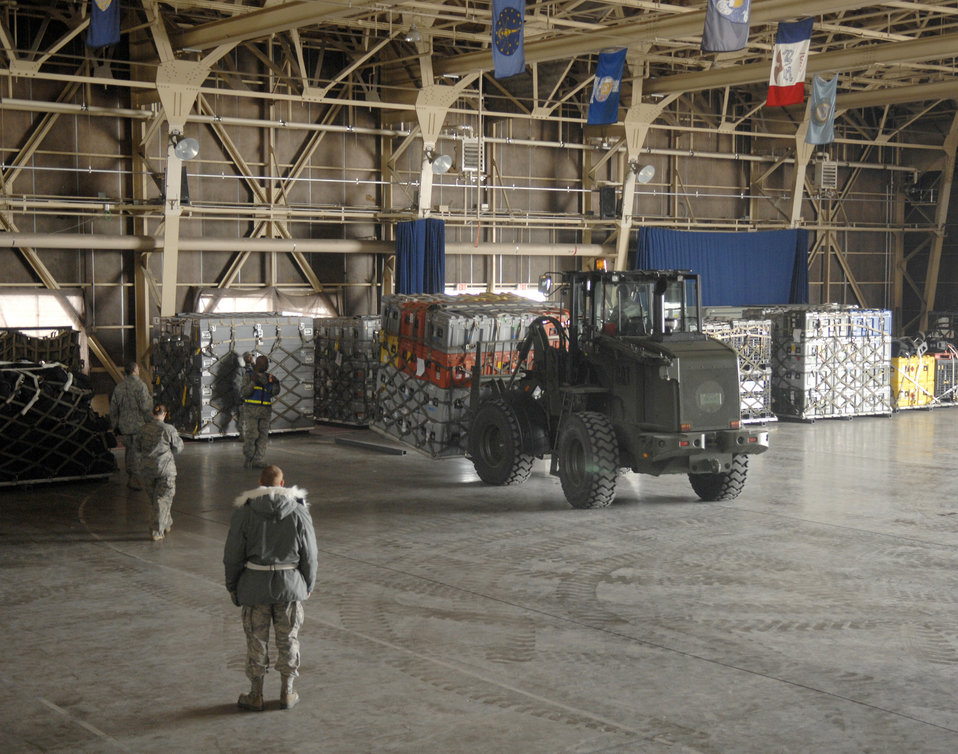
Emergency Response for Japan's Earthquake disaster

U.S. Air Force personnel store pallets from a Los Angeles Search and Rescue team, Task Force 2 at Misowa Air Force Base, Japan during an emergency response on March 13, 2011. Aircrew from the 4th Airlift Squadron, McChord AFB, Wash. are transporting members and equipment for Los Angeles Search and Rescue team to Japan to aid in recovery and care of victims of the recent earthquake.